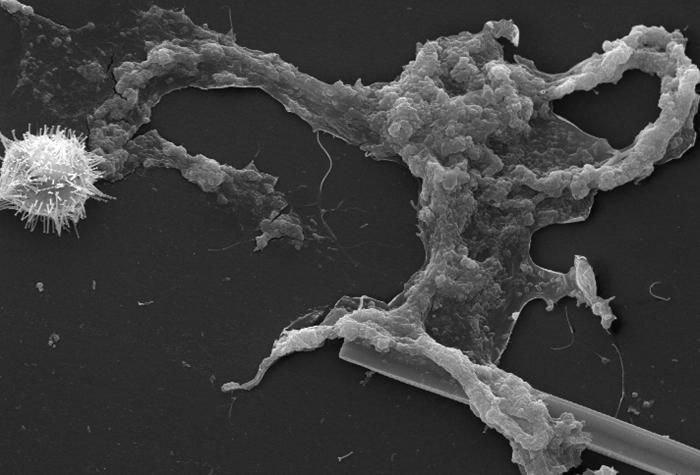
This scanning electron micrograph (SEM) of an untreated water specimen extracted from a wild stream mainly used to control flooding during inclement weather, revealed the presence of unidentified organisms, which included bacteria, protozoa, and algae. Occupying most of the field of view, an unidentified amorphous mucoidal biofilm was featured, which appeared to have enmeshed numbers of amoeboid organisms, while on the left was a strangely-beautiful microorganism displaying an outer surface studded with numerous projections, making it appear like a microscopic sea urchin. See PHIL 11715 for a colorized version of this image.